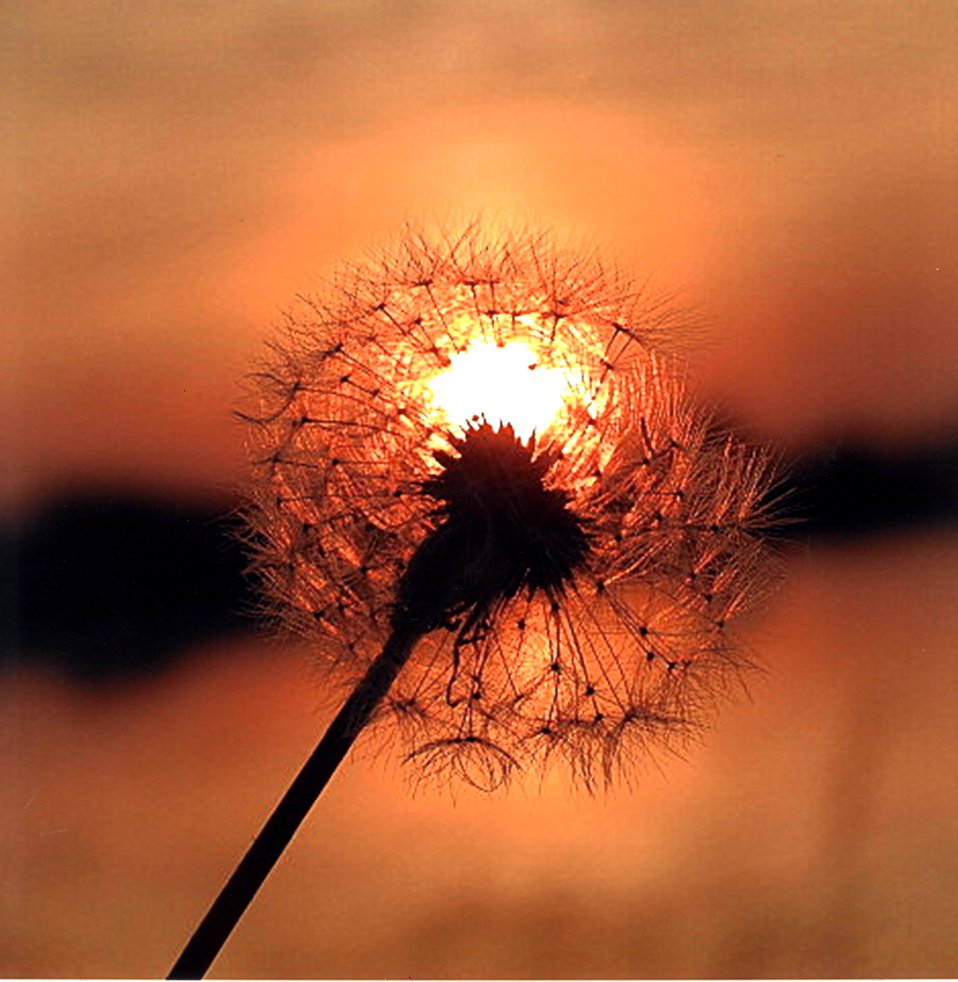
Mekayla Kelly, Age 14, Dandelion in Sunset

Photo by Mekayla Kelly/USFWS.

Shiawassee National Wildlife Refuge 2013 Photo Contest
Youth Category - Age 14